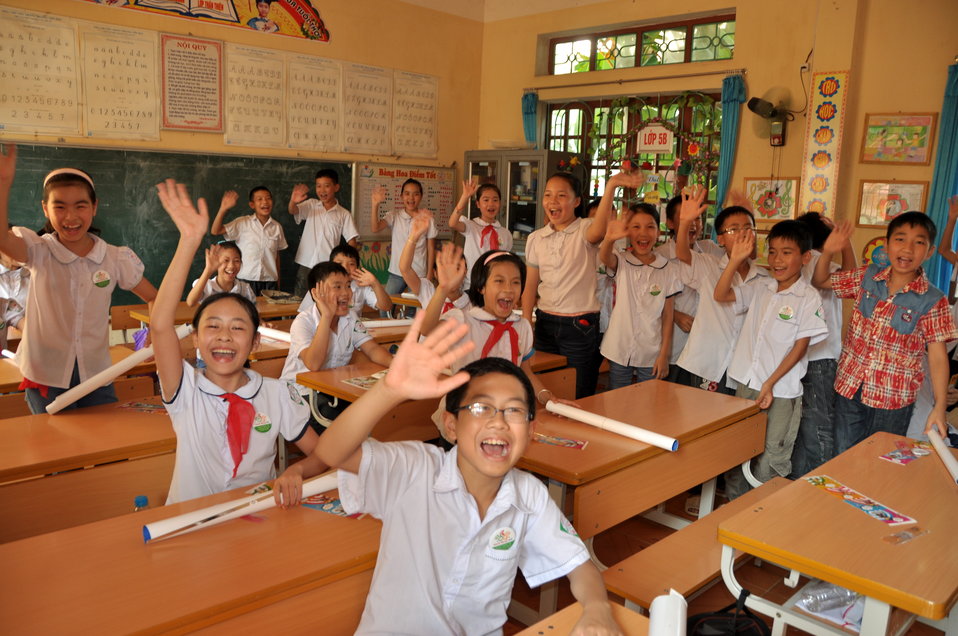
USAID supports deworming education and medication distribution in Bac Giang Province

May 20, 2013